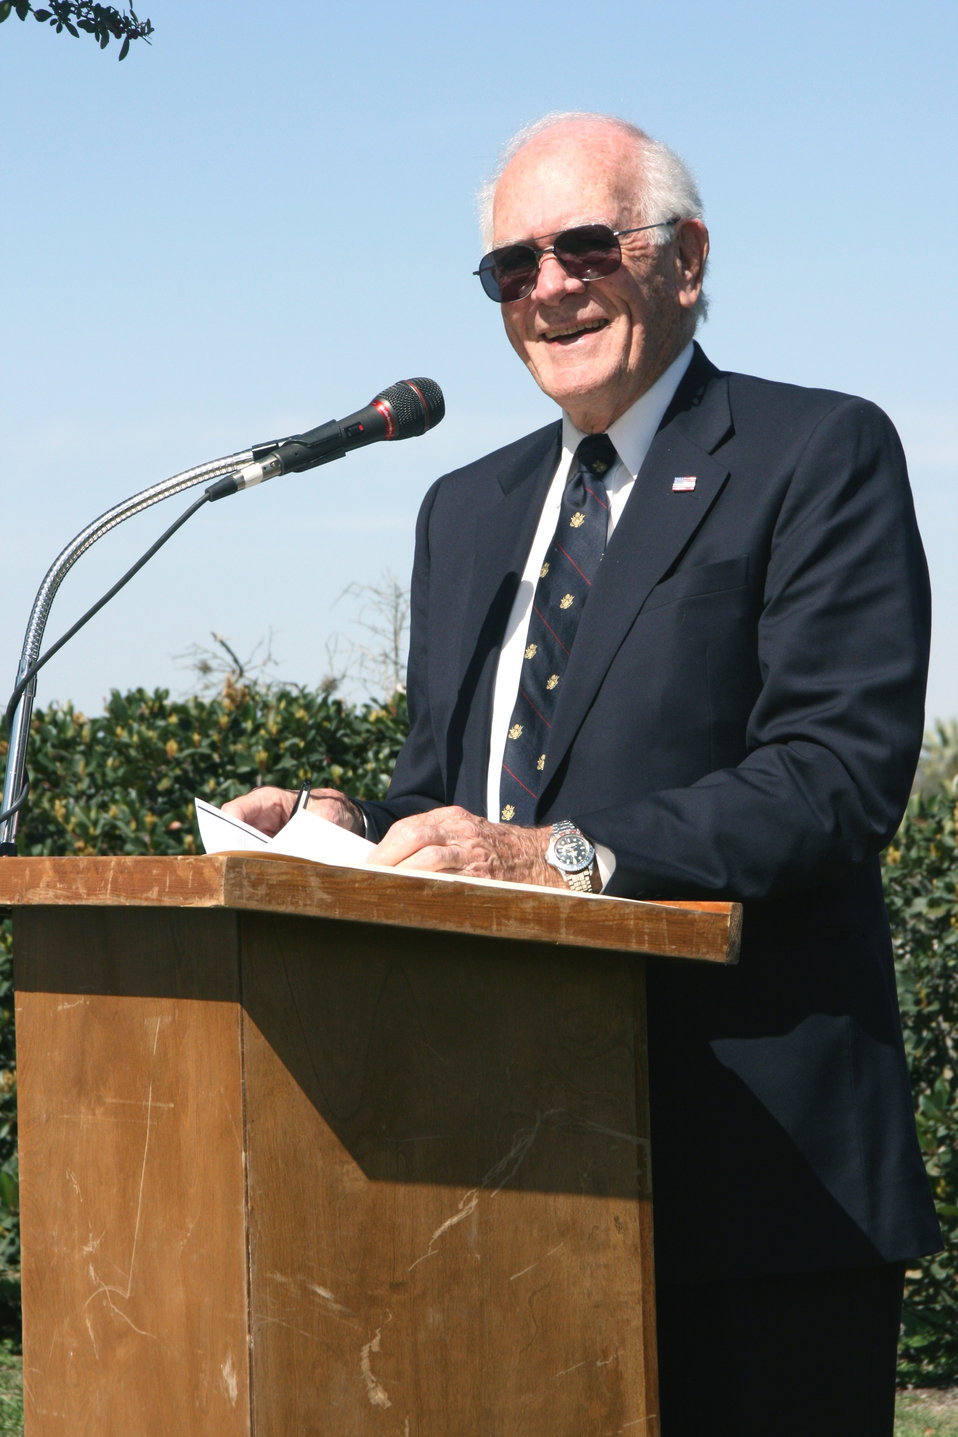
Fort Sam commemorates first military flight

Oliver R. Crawford recounts the events leading up to the first military aerial flight that took place 97 years ago at the Fort Sam Houston, Texas, parade ground during a commemoration ceremony there March 2. Mr. Crawford is a member of the Order of Daedalians and former World War II pilot.